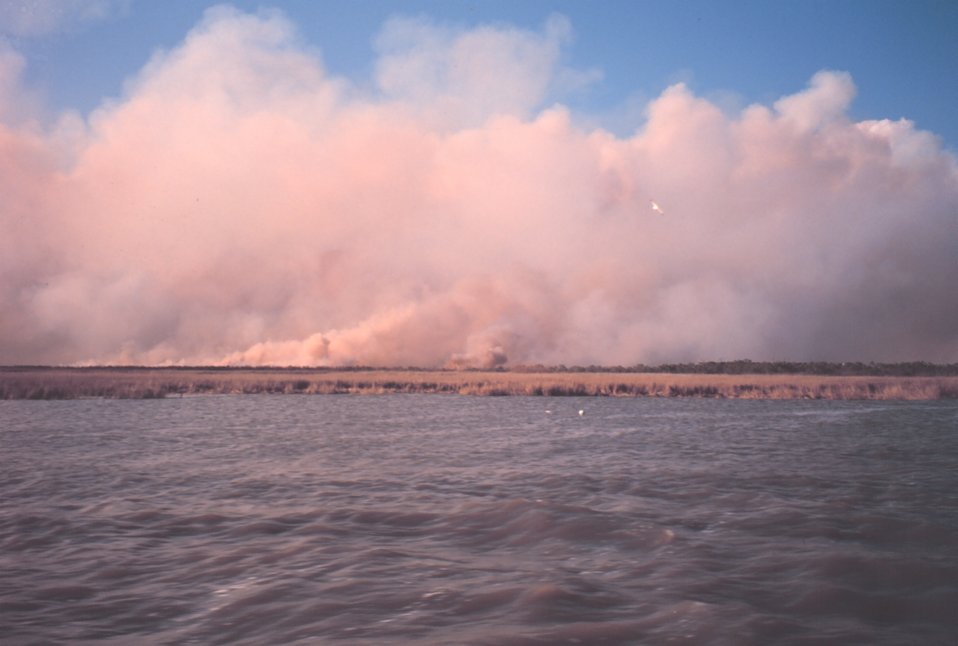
Controlled burn to enhance following year's growth of marsh vegetation